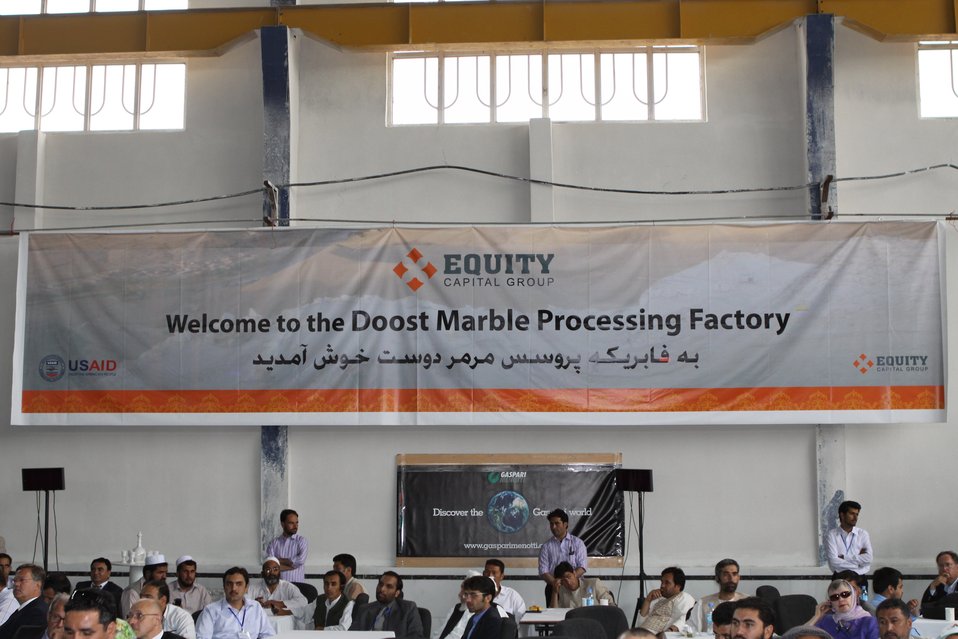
100525 Hirat Marble Conference 271